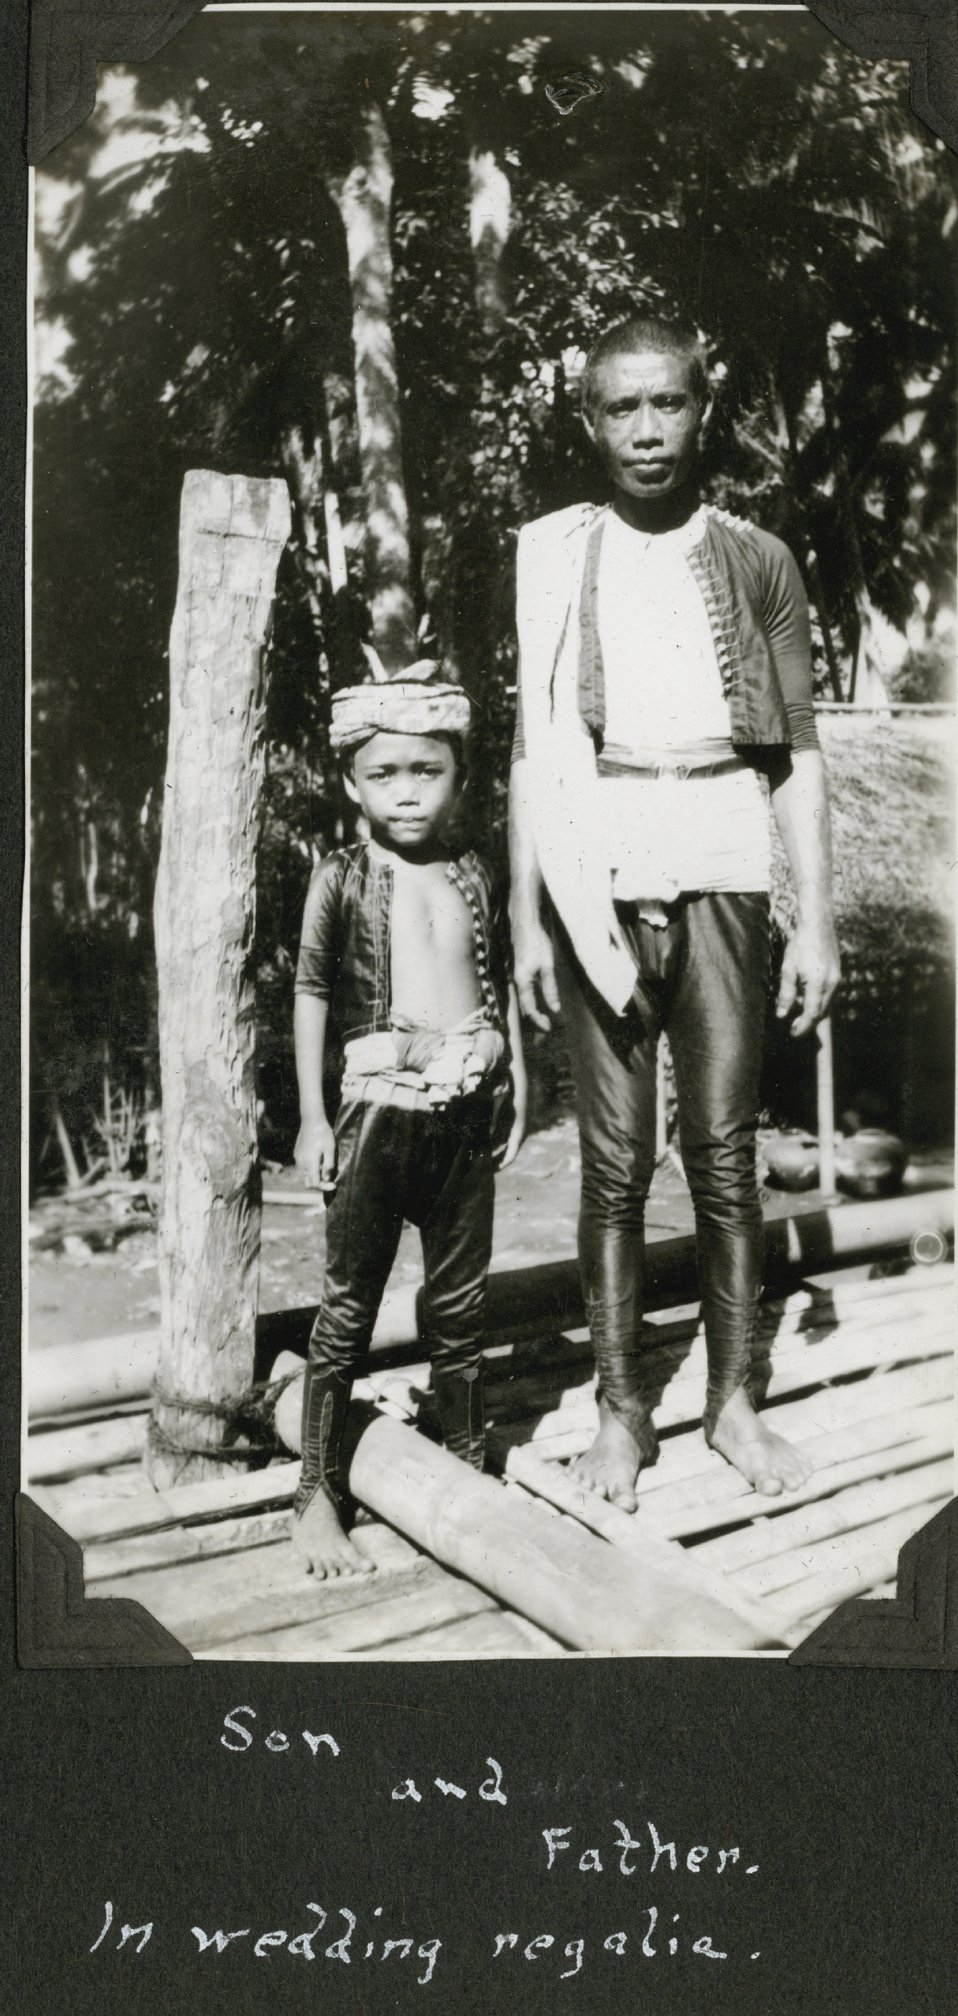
Moro father and son in wedding regalia.